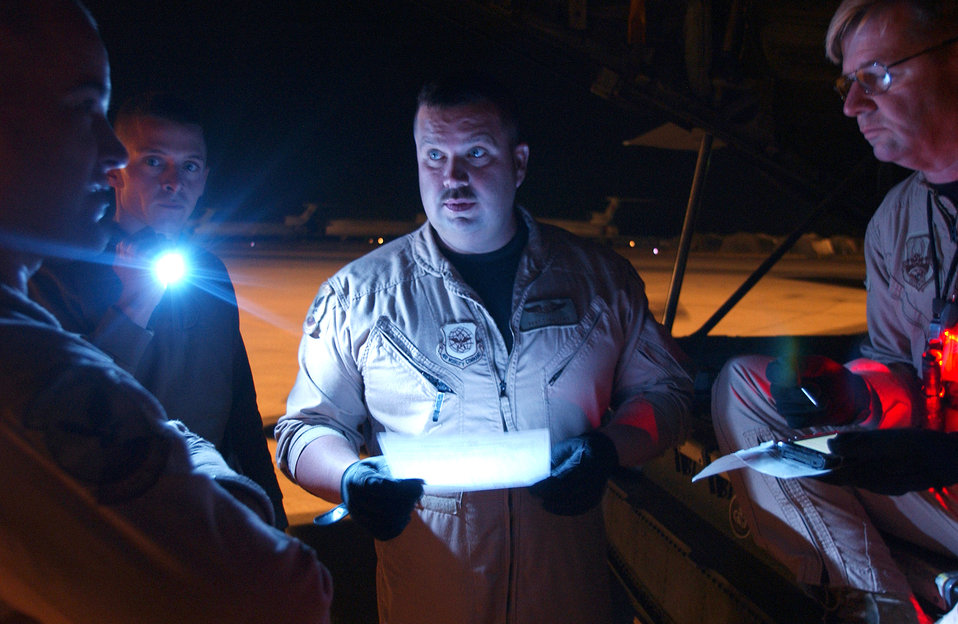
Pakistan bound

DUSHANBE, Tajikistan -- Staff Sgts. Christopher Yates, center left, and Todd Lowe, center, verify payload information before their C-5 Galaxy departs for Pakistan. The Airmen, from the West Virginia Air National Guard, loaded their cargo plane Oct. 23 with 22,000 pounds of humanitarian goods donated by the people of Tajikistan. The relief aid was bound for earthquake victims in northern Pakistan.